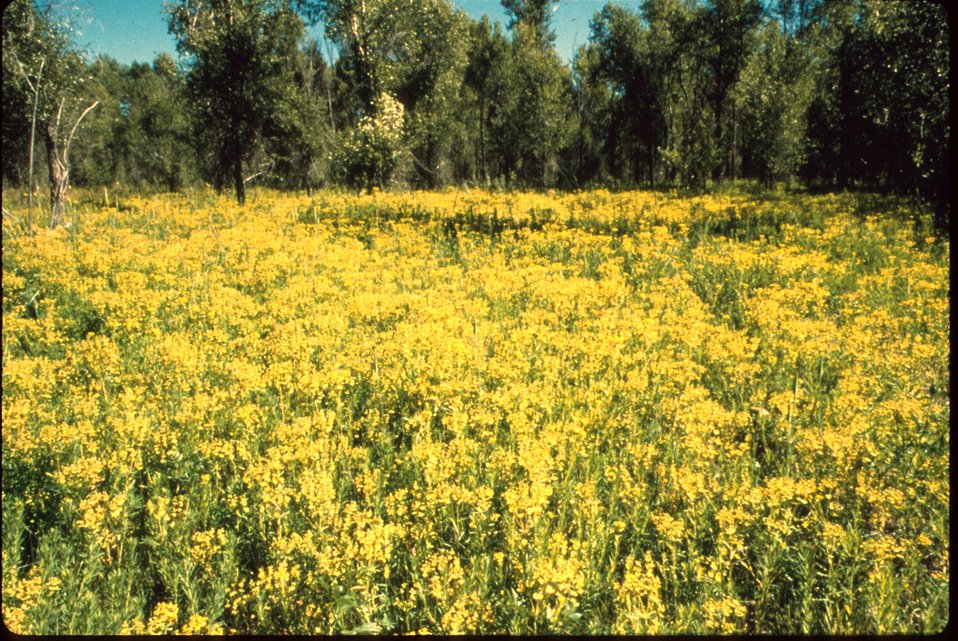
Leafy Spurge on South Fork of Snake River Idaho vegetation Plants in BLM